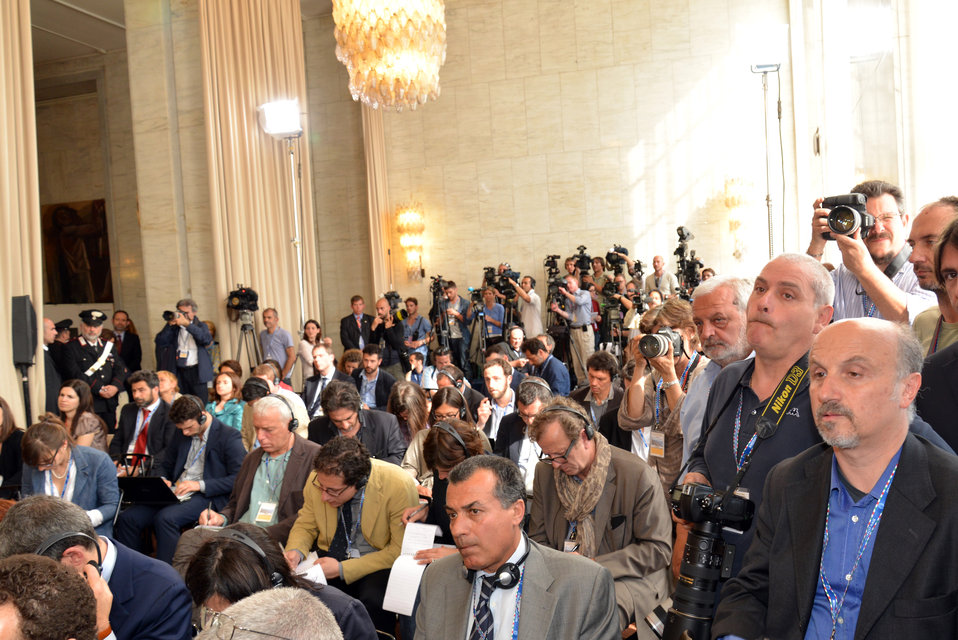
Reporters Await Secretary Kerry and Italian Foreign Minister Bonino

Reporters wait for U.S. Secretary of State John Kerry and Italian Foreign Minister Emma Bonino to begin their joint press conference at the Ministry of Foreign Affairs in Rome, Italy, on May 9, 2013.